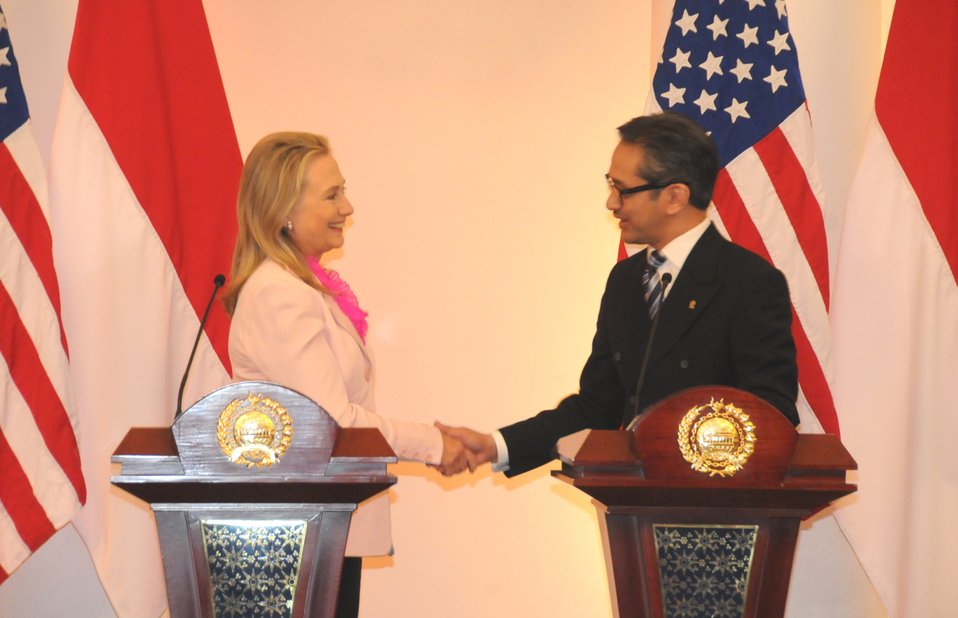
Secretary Clinton With Foreign Minister Natalegawa in Indonesia

U.S. Secretary of State Hillary Rodham Clinton shakes hand with Indonesian Foreign Minister Raden Mohammad Marty Muliana Natalegawa during a press conference after their meeting in Jakarta, Indonesia, September 3, 2012.